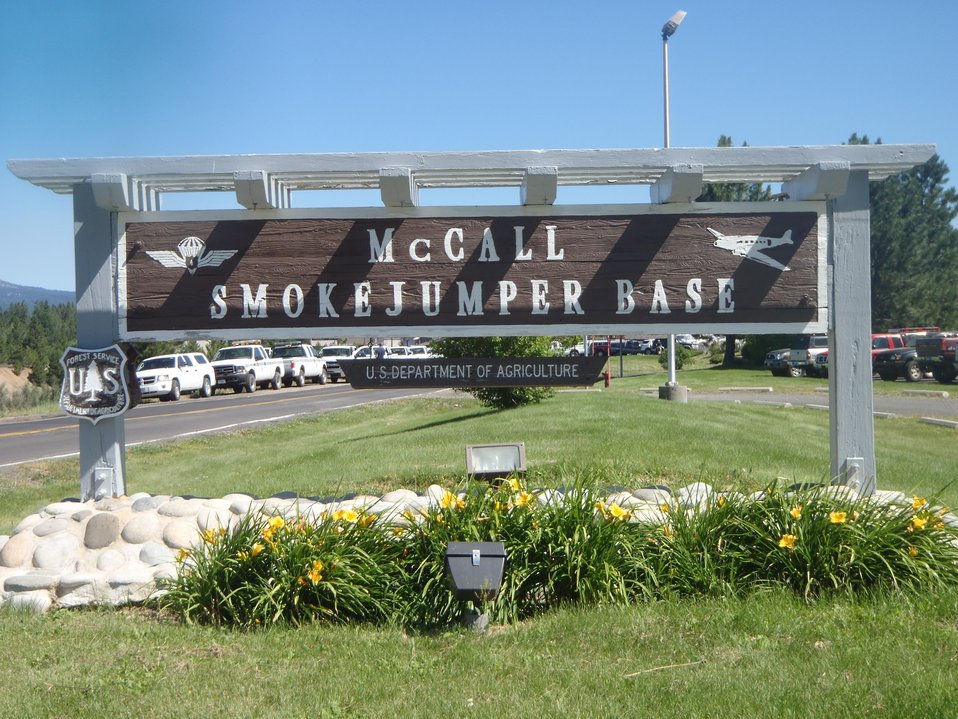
Smoke jumper base located in McCall, ID. Smoke jumpers from this base will assist in fighting the Thunder City Fire. The Thunder City Fire in the Payette National Forest near Stibnite, ID began on Jul. 19, 2013 by lightning and has consumed approximately 1, 400 acres and is approximately 15% contained.